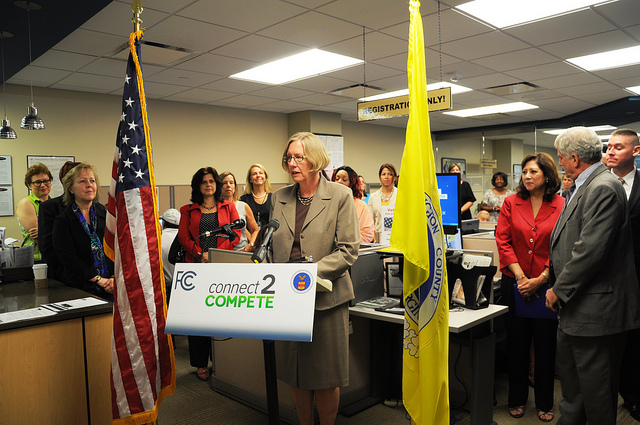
Connect to Compete 7.16.12

Susan Hildreth, Director Institute of Museum and Library Services speaking at the Connect to Compete event.